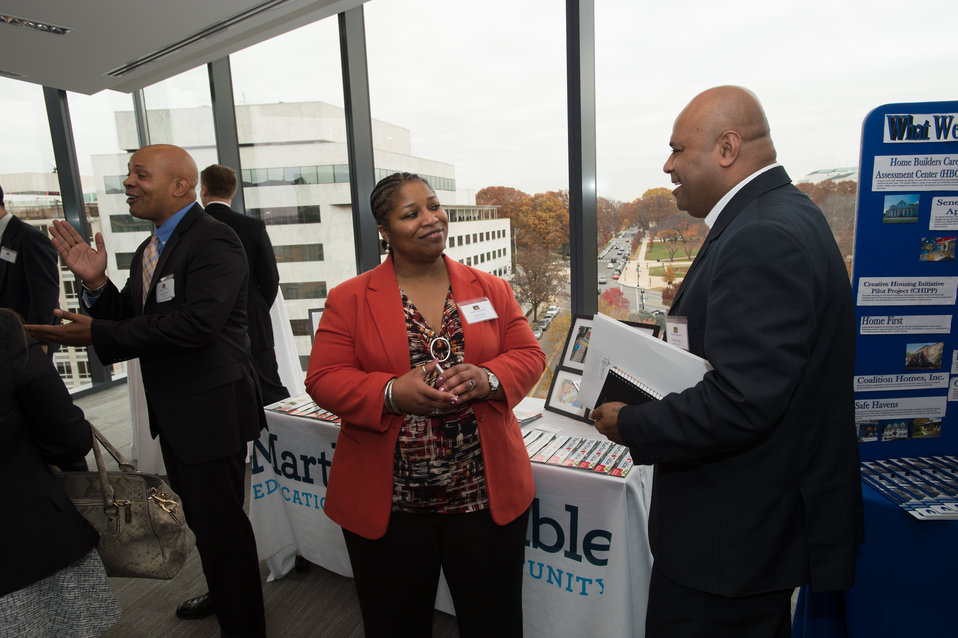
Martha’s Table Office of Development Interm Director Joan Woods (center) speaks with an embassy representative at the Share the Season event organized by the U.S. Department of State Office of the Chief of Protocol Diplomatic Partnership Division at the Business Roundtable (BRT) in Washington, D.C. on Thursday, Nov. 21, 2013. BRT is a non-profit association of chief executive officers of leading U.S. companies that encourages embassies and diplomats to be active in local community service projects.